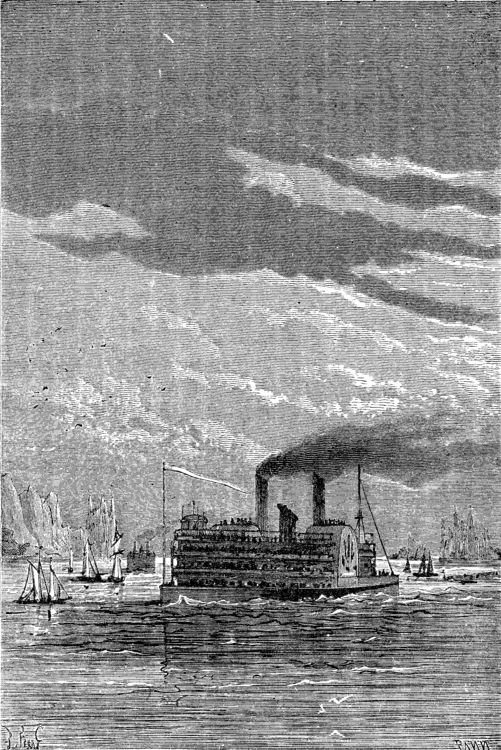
An illustration from Jules Verne's novel 'A Floating City' (1869) drawn by Jules Férat. Polski: Ilustracja powieści Juliusza Verne'a 'Pływające miasto' (1869) autorstwa Julesa Férata. Français : Jules Verne: 'Une Ville flottante' (1869), dessins par Jules Férat. Orginal text: Français : Les eaux du fleuve apparurent.